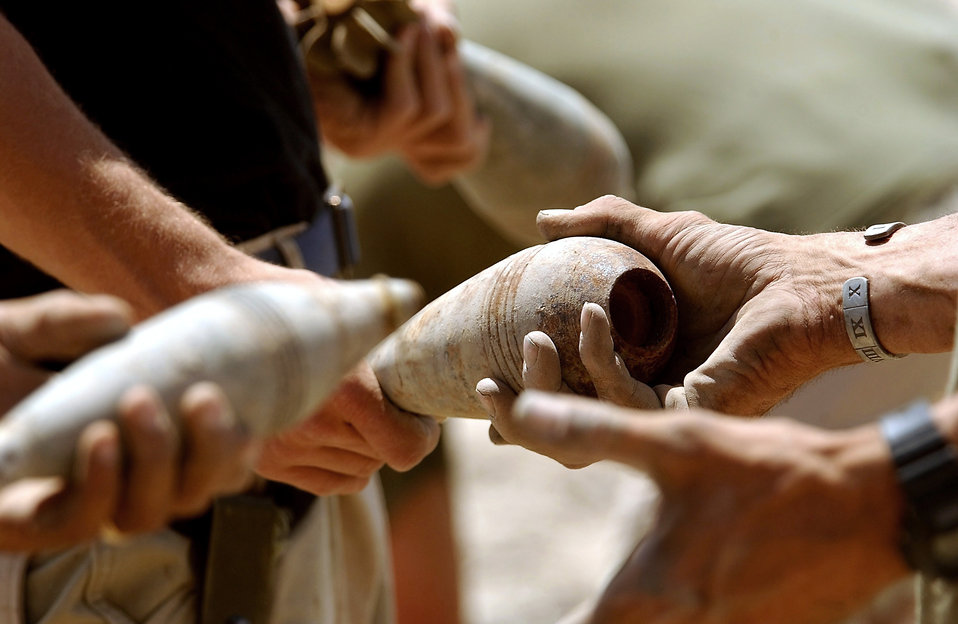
One of 305

OPERATION IRAQI FREEDOM -- Members of the 407th Explosive Ordnance Disposal Squadron and Marine Wing Support Squadron 371 from Yuma, Ariz., unload mortar rounds found near an Iraqi school south of An Nasiriyah on May 5. The units found 305 mortar rounds during a sweep. They are deployed to Tallil Air Base in southern Iraq to support Operation Iraqi Freedom.